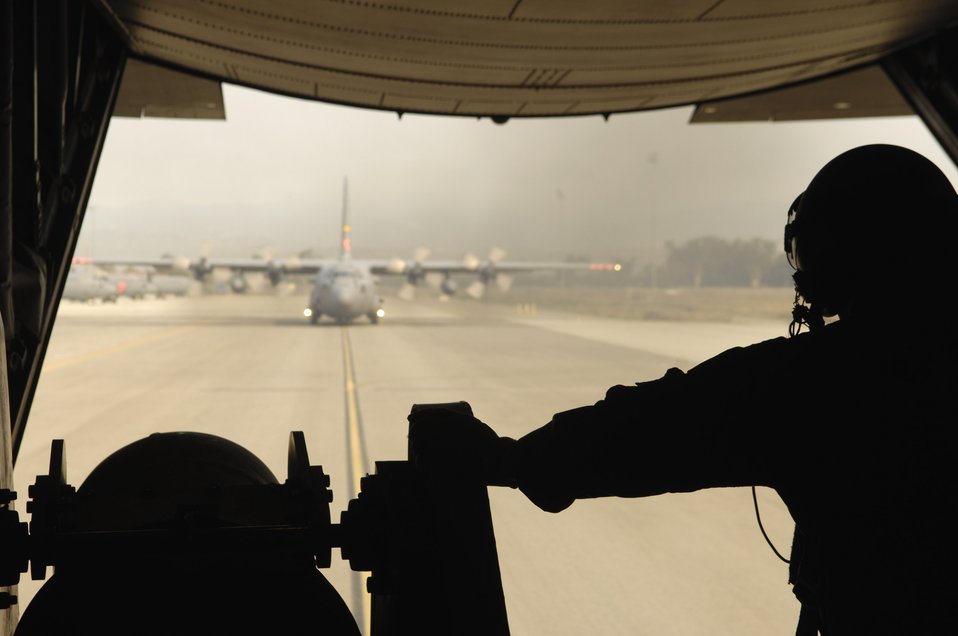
Guard, Reserve aid in California firefighting efforts

Master Sgt. Thomas Freeman prepares for takeoff on a C-130 Hercules in support of the California firefighting efforts Oct. 25 from Channel Islands Air National Guard Base, Calif. Sergeant Freeman is assigned to the 302nd Airlift Wing from Peterson Air Force Base, Colo. Air Force Reserve Command and Air National Guard Airmen are participating in the Southern California firefighting effort.